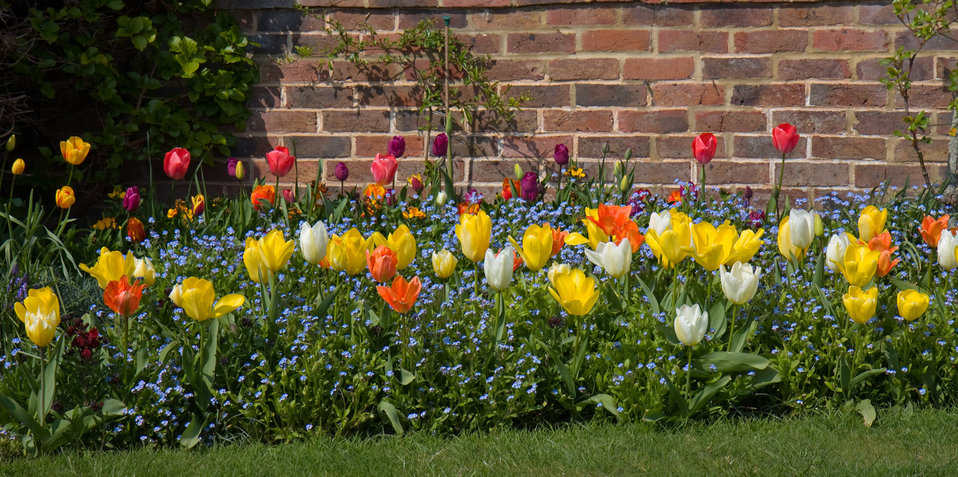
Tulip flowers colorful

Colorful tulips display in the garden image.